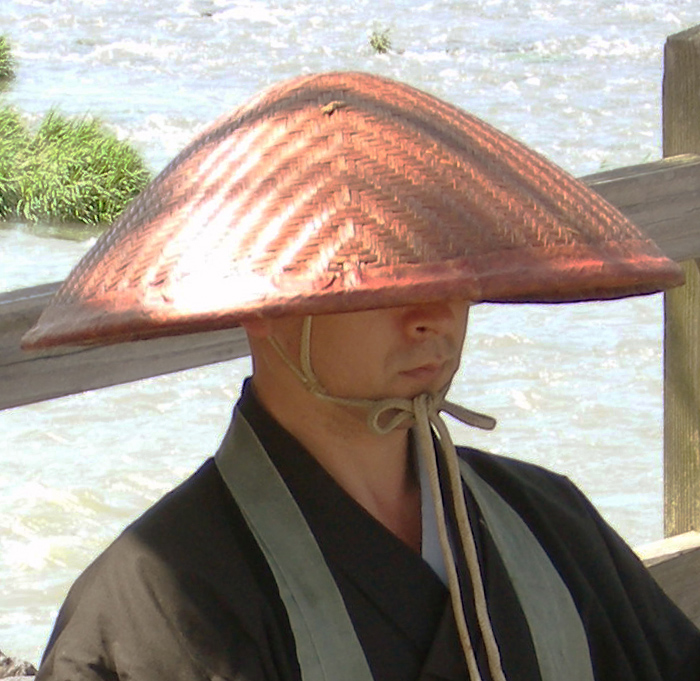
Photograph of Japanese Buddhist monk, cropped to show hat better at thumbnail size